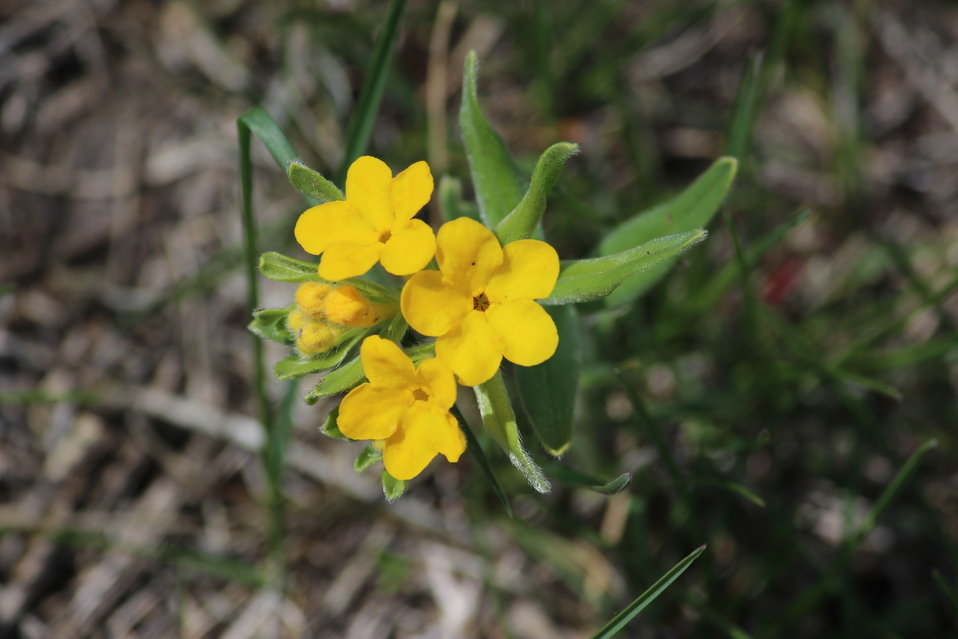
Hoary Puccoon

This perennial native wildflower is found blooming in high-quality native prairies during April and May. Each flower produces four nutlets (seeds). This flower was used to make dye by Native Americans.